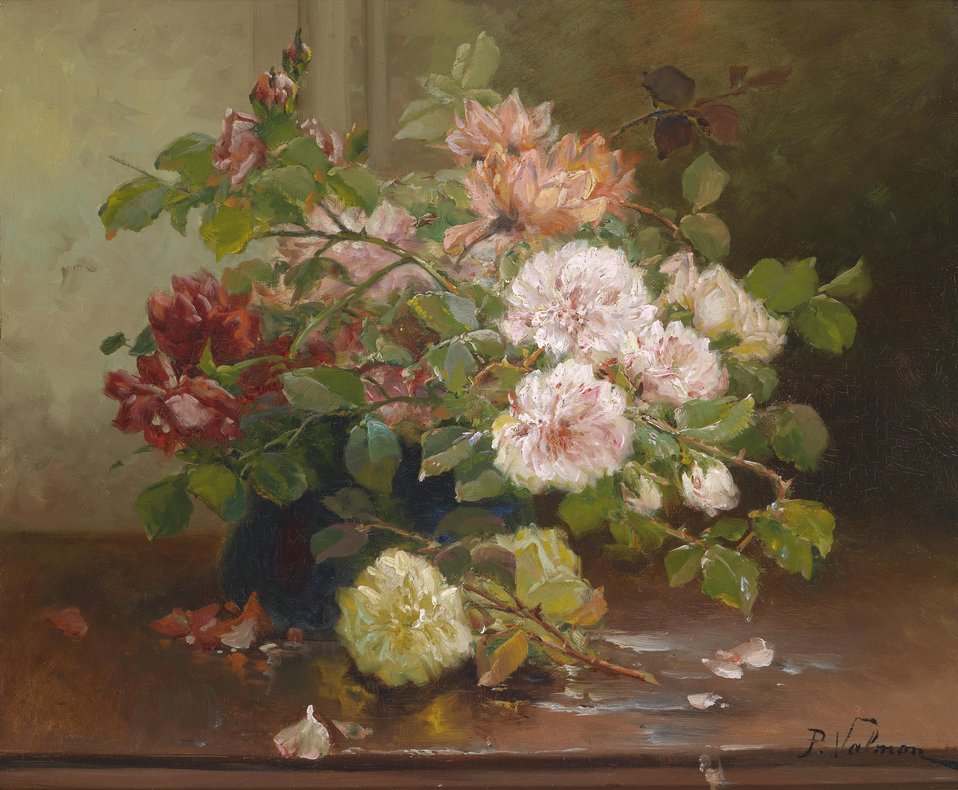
Blumenstillleben, signiert mit dem Pseudonym P. Valmon, Öl auf Leinwand, 45,5 x 55 cm (W